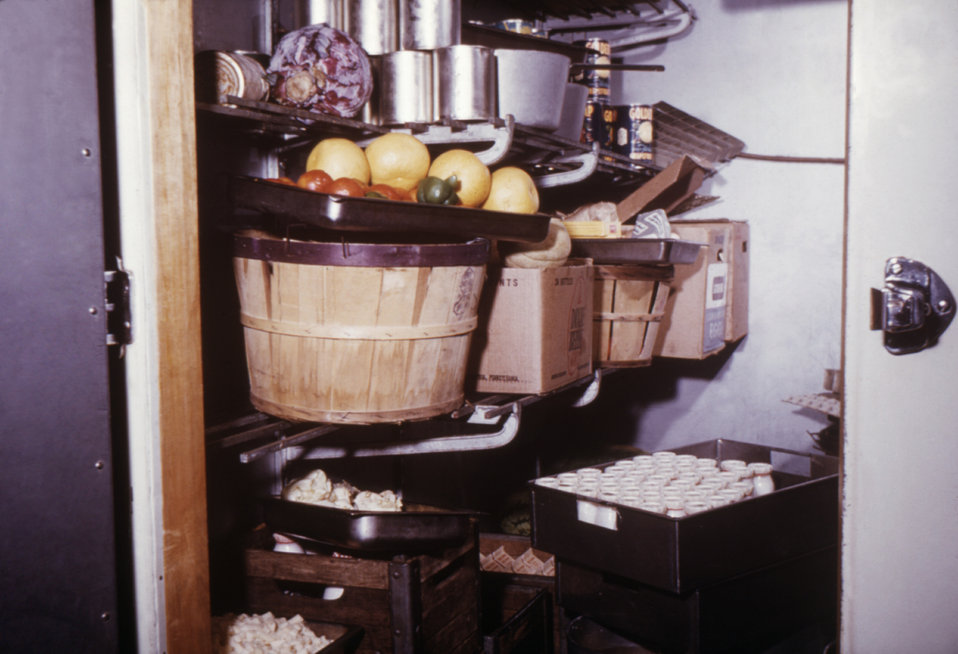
This 1975 photograph shows an overcrowded refrigerated storage unit found in a migrant labor camp.